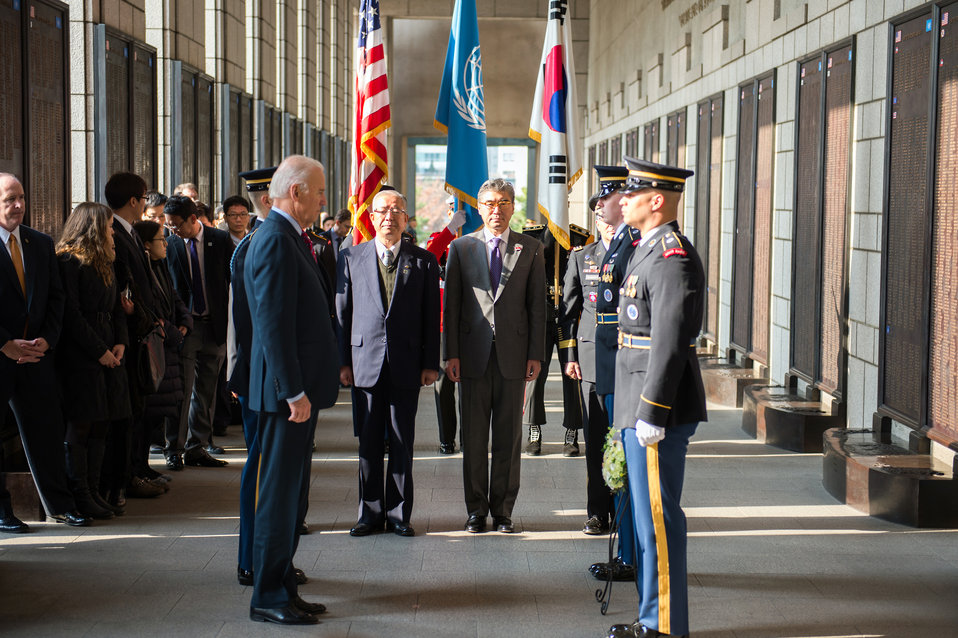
Vice President Biden Honors Military Members at the War Memorial of Korea

Vice President Joseph Biden participates in a wreath-laying ceremony at the War Memorial of Korea to honor military members who died in service to their country in Seoul, South Korea, on December 7, 2013.